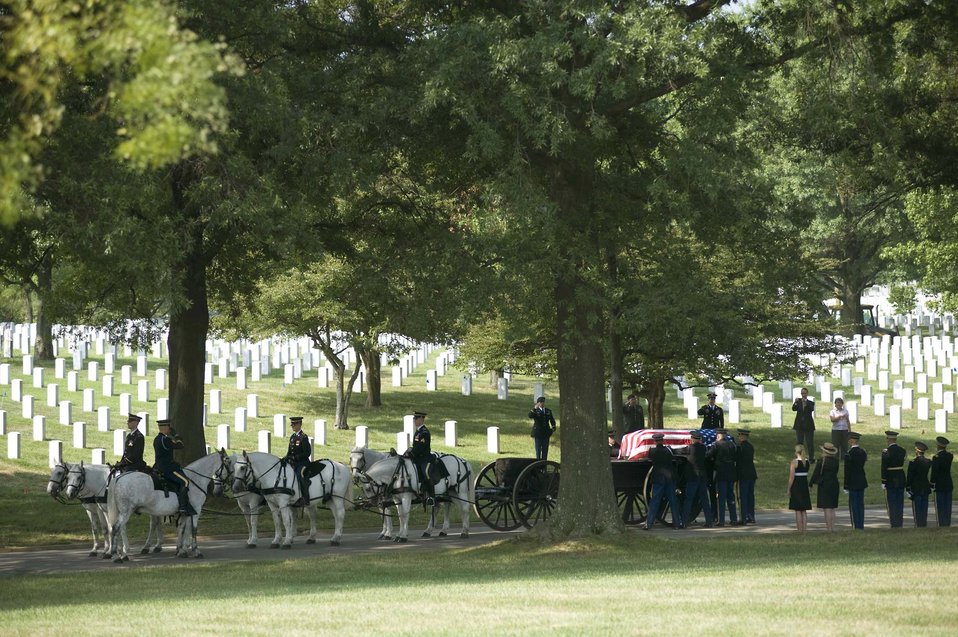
Seven WWII Airmen buried at Arlington National Cemetery

A casket containing the remains of six Airmen, who perished in 1944 in a C-47 aircraft crash in Burma, is removed from a horse-drawn caisson July 15, 2010 at Arlington National Cemetery, Va. The downed aircraft had a crew of seven - all of whom where interned here in two caskets following repatriation.